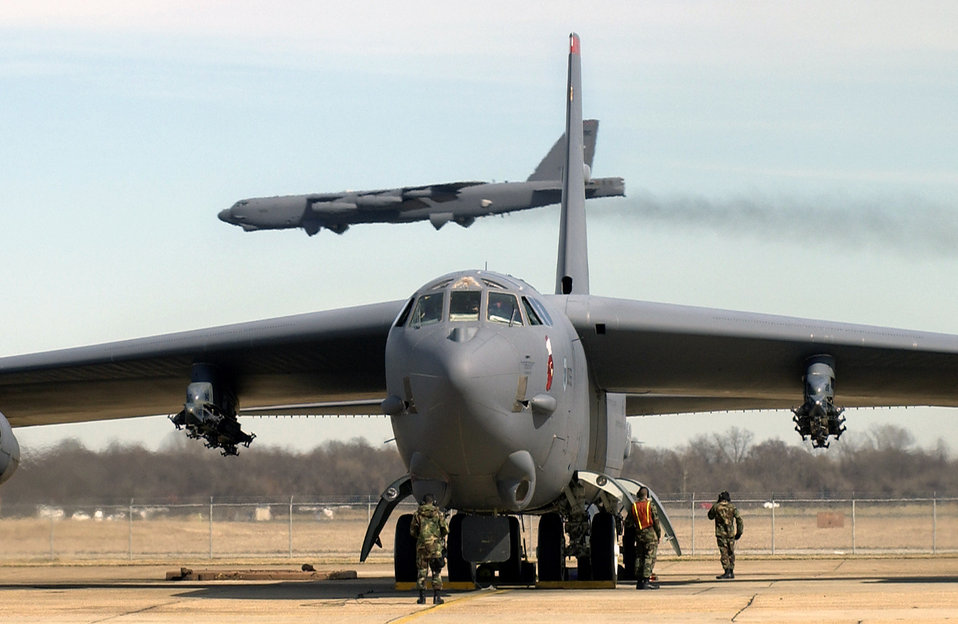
Upgraded B-52 on cutting edge

A B-52 prepares for departure as another B-52 arrives. The B-52 is capable of flying 8,800 miles without refueling and can carry a weapons load of up to 70,000 pounds.